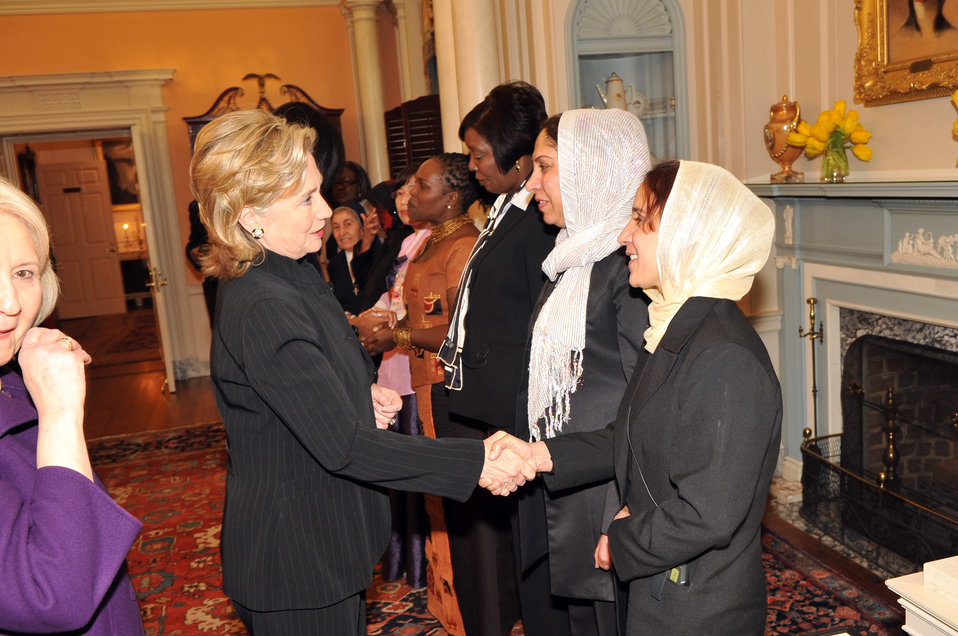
Secretary Clinton Shakes Hands With Honoree Shukria Asil

U.S. Secretary of State Hillary Rodham Clinton shakes hands with Honoree Shukria Asil of Afghanistan at the 2010 International Women of Courage at the U.S. Department of State, Washington, D.C. March 10, 2010.